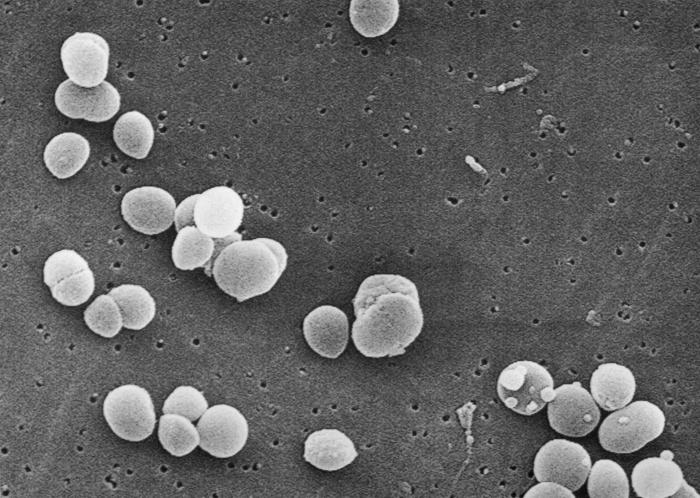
This is a scanning electron micrograph depicting Gram-positive Staphylococcus aureus bacteria.